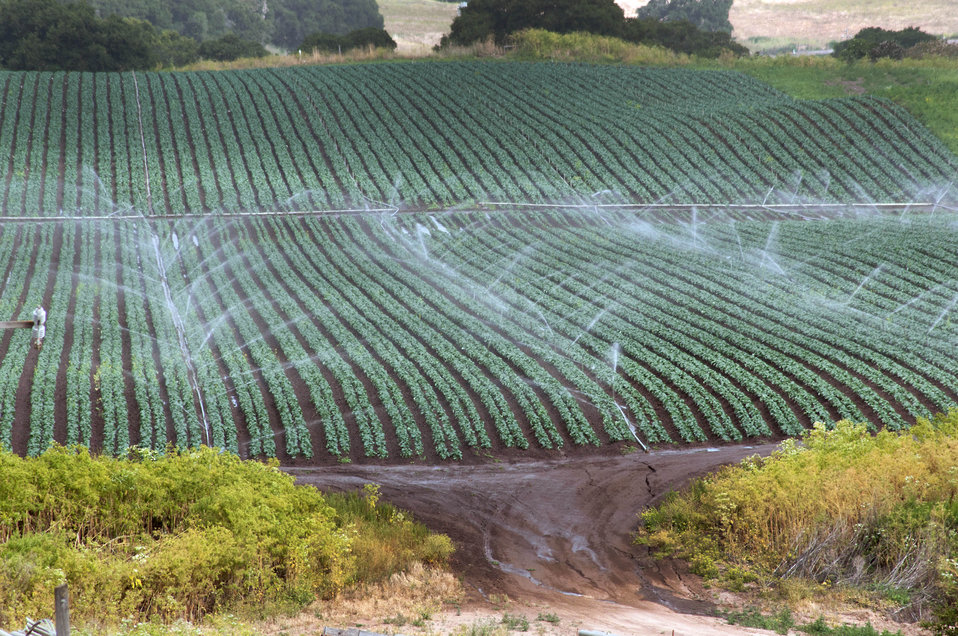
Conventional sprinkler irrigation at Leafy Greens, operated by farmer Tom Heess, in the Salinas Valley of California on Thursday, June 16, 2011. Leafy Greens grows row crops of lettuce, broccoli, cauliflower sweet peas and seed beans. He uses rotational crop plantings to control weeds and plant disease. When a plot of land is at rest, he plants a cover crop of barley and rye grass because the roots hold the topsoil reducing erosion of the soil. He is converting his irrigation system from conventional sprinklers (seen) to micro irrigation. Where one system produces runoff and erosion of the soil (seen in foreground); the other has little or no erosion, less maintenance, easy harvest and less water is needed. When seasonal rains produce runoff, the silt that flows with it is caught in sediment ponds (left and right of pathway). The ponds have grass, bushes and trees to hold the structure and allow the silt to settle. Spillways lead to holding ponds and eventually the Salinas River, a tributary of the Monterey Bay National Marine Sanctuary. So far, because of its design and efficiency, no water has made it to the river.